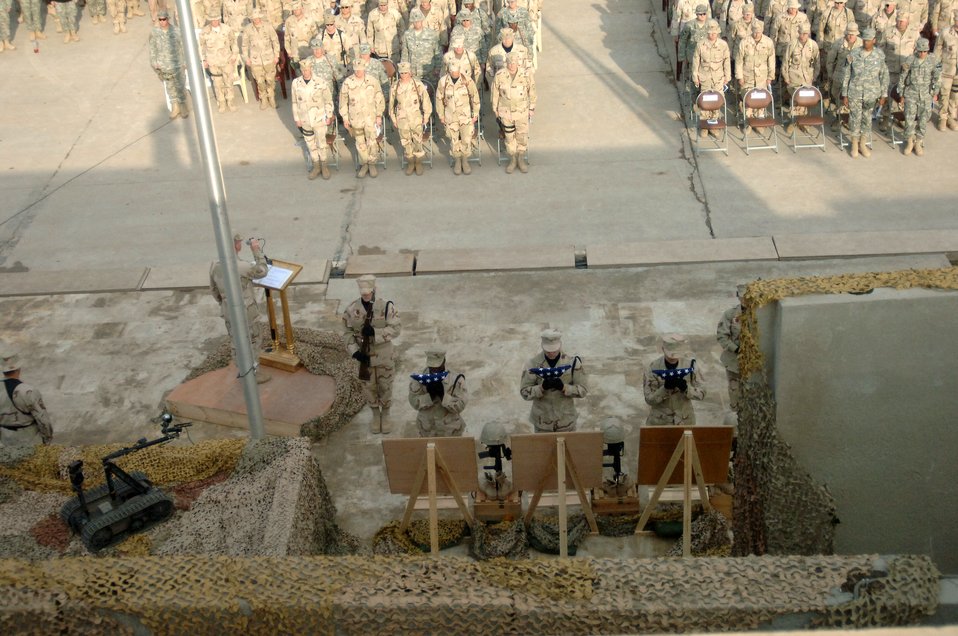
Fallen EOD Airmen remembered

Members of the 447th Air Expeditionary Group at Sather Air Base, Iraq, honor three Airmen Jan. 10 who were killed in the line of duty Jan. 7 when a vehicle-borne improvised explosive device they were investigating detonated. Base honor guard Airmen place flags under photos of the three fallen heroes.